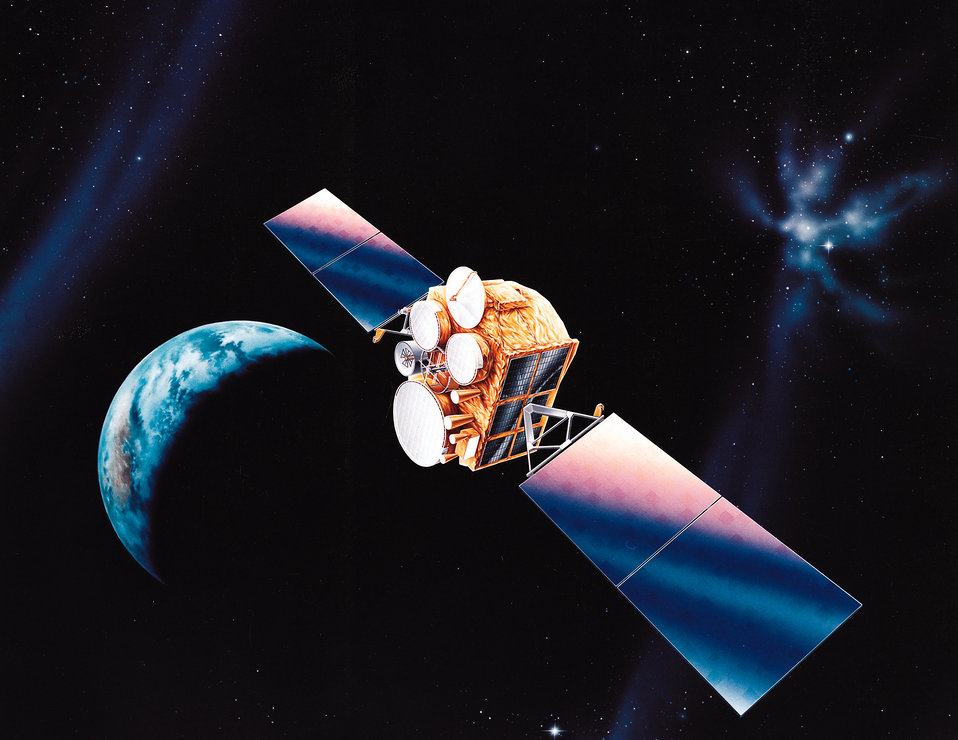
3 SOPS satellite test

Defense Satellite Communication System satellites (like the one pictured) provide critical communication links used by the Department of Defense members and U.S. allies. Airmen with the 3rd Space Operations Squadron intentionally spun a DSCS test satellite off its operational axis, then initiated a new procedure for correcting the spacecraft's attitude.